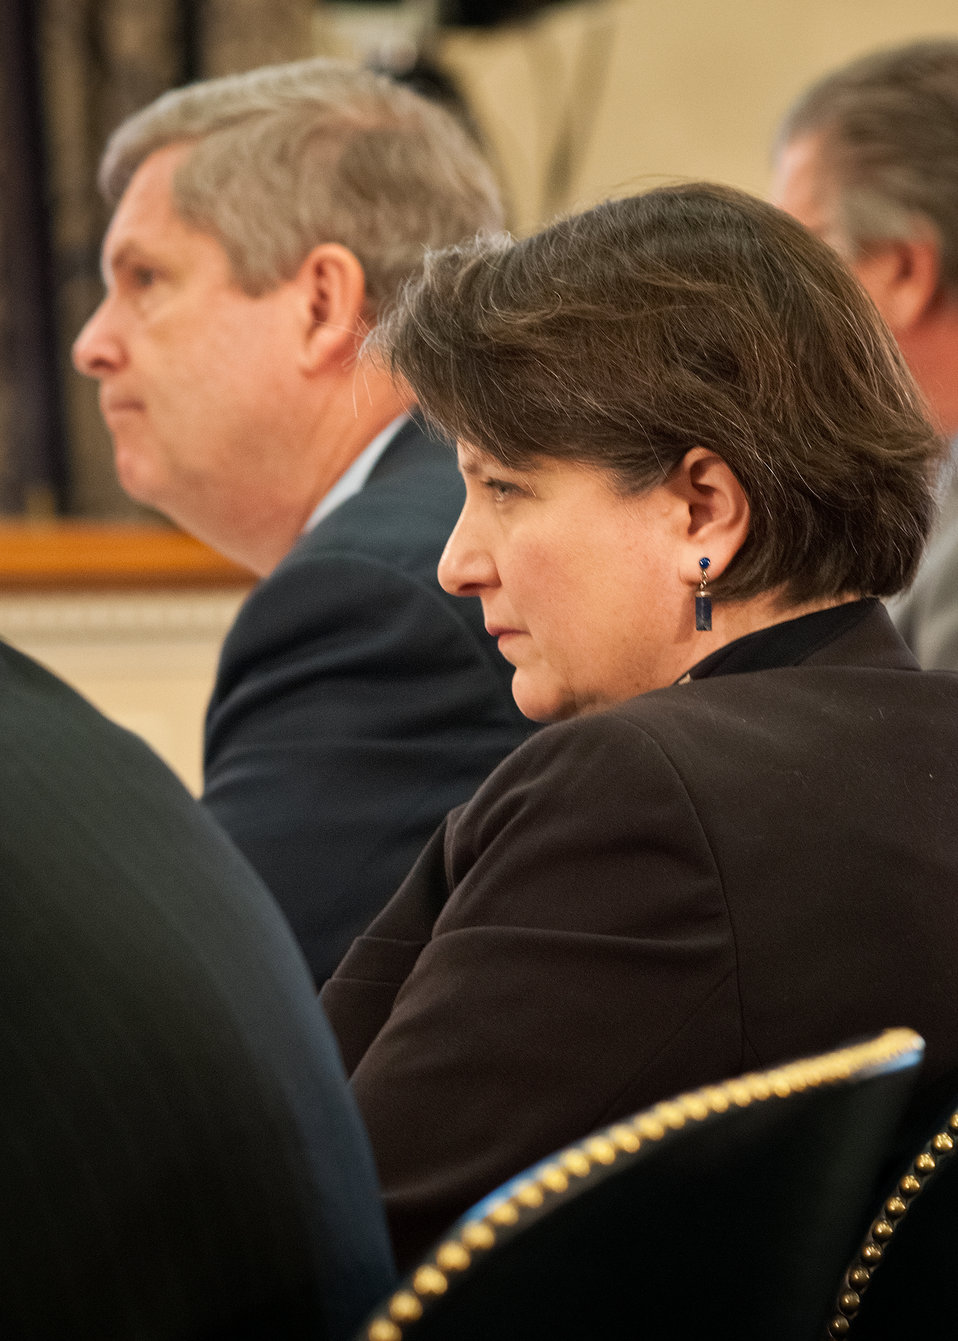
From left: Agriculture Secretary Tom Vilsack and Dr. Kathleen Merrigan, Deputy Secretary who served as a supporting witness listen to questions posed by members of the House Agriculture Appropriations Committee to discuss the United States Department of Agriculture budget in the Rayburn House Office Building on Friday, February 17, 2012 in Washington, D.C.